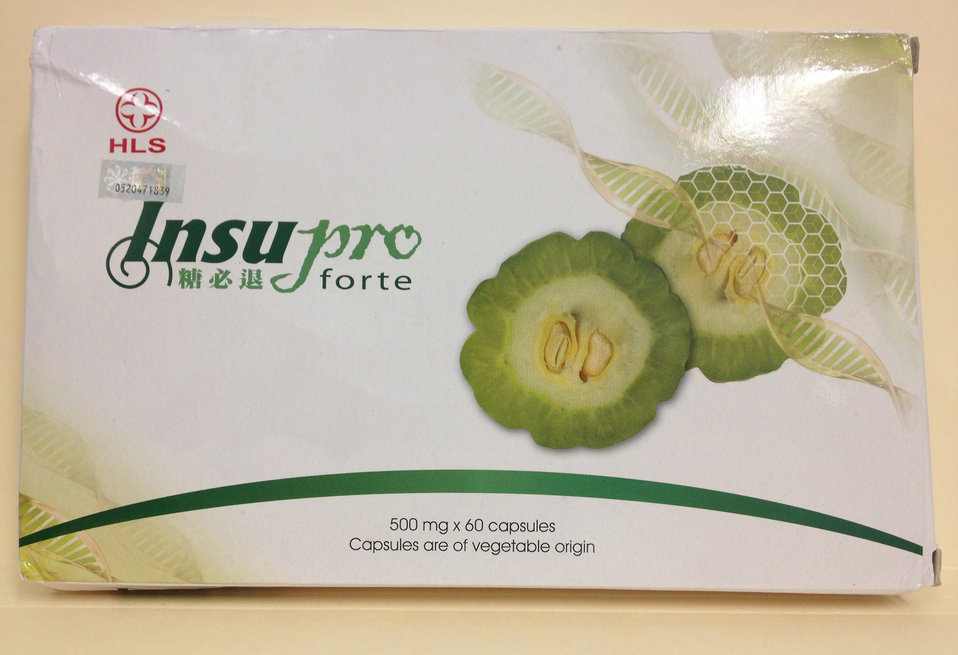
Illegally Sold Diabetes Treatments - Insupro Forte

This product is illegally promoted as a natural alternative to diabetes medicine, but was found to contain an undeclared active ingredient, glyburide. FDA warns consumers to avoid unproven and potentially unsafe products sold as treatments for diabetes.